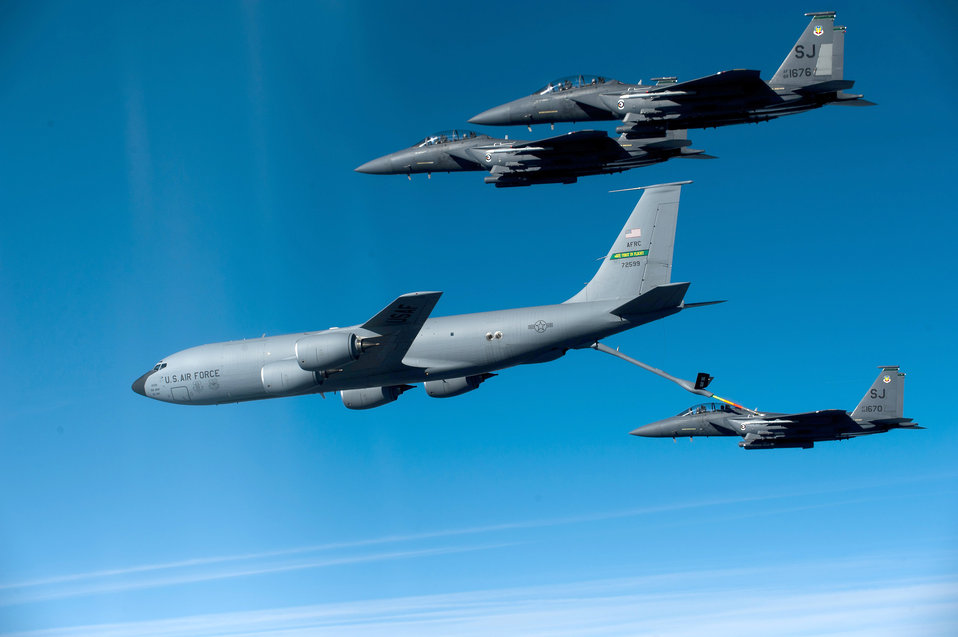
F-15s training mission

The pilot of an F-15E Strike Eagle approaches a KC-135R Stratotanker during a training mission Dec. 17, 2010, over North Carolina. The F-15E is from the 335th Fighter Squadron from Seymour Johnson Air Force Base, N.C.